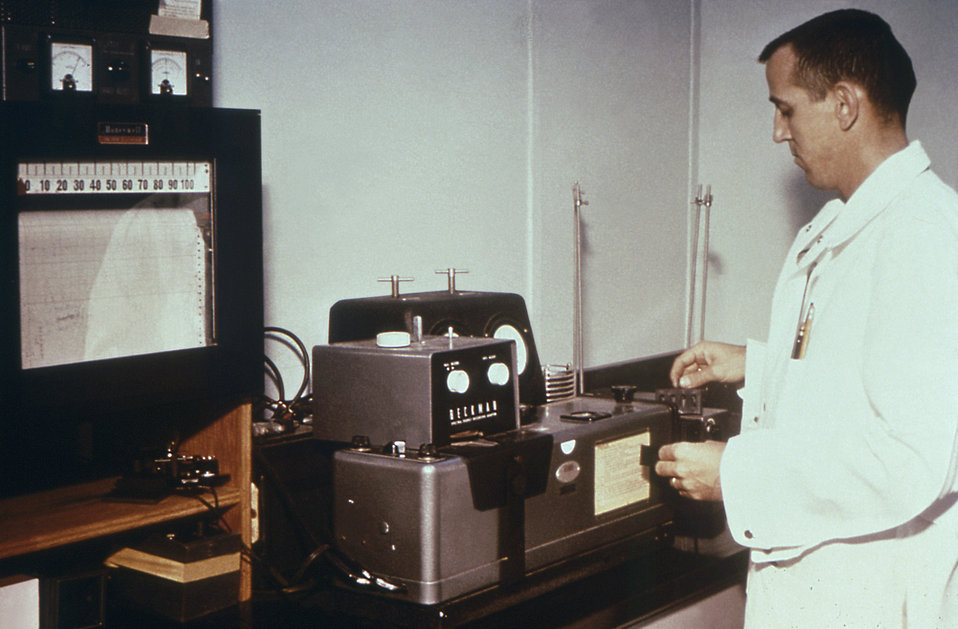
This 1974 photograph depicts a laboratorian conducting research in a CDC NIOSH facility.